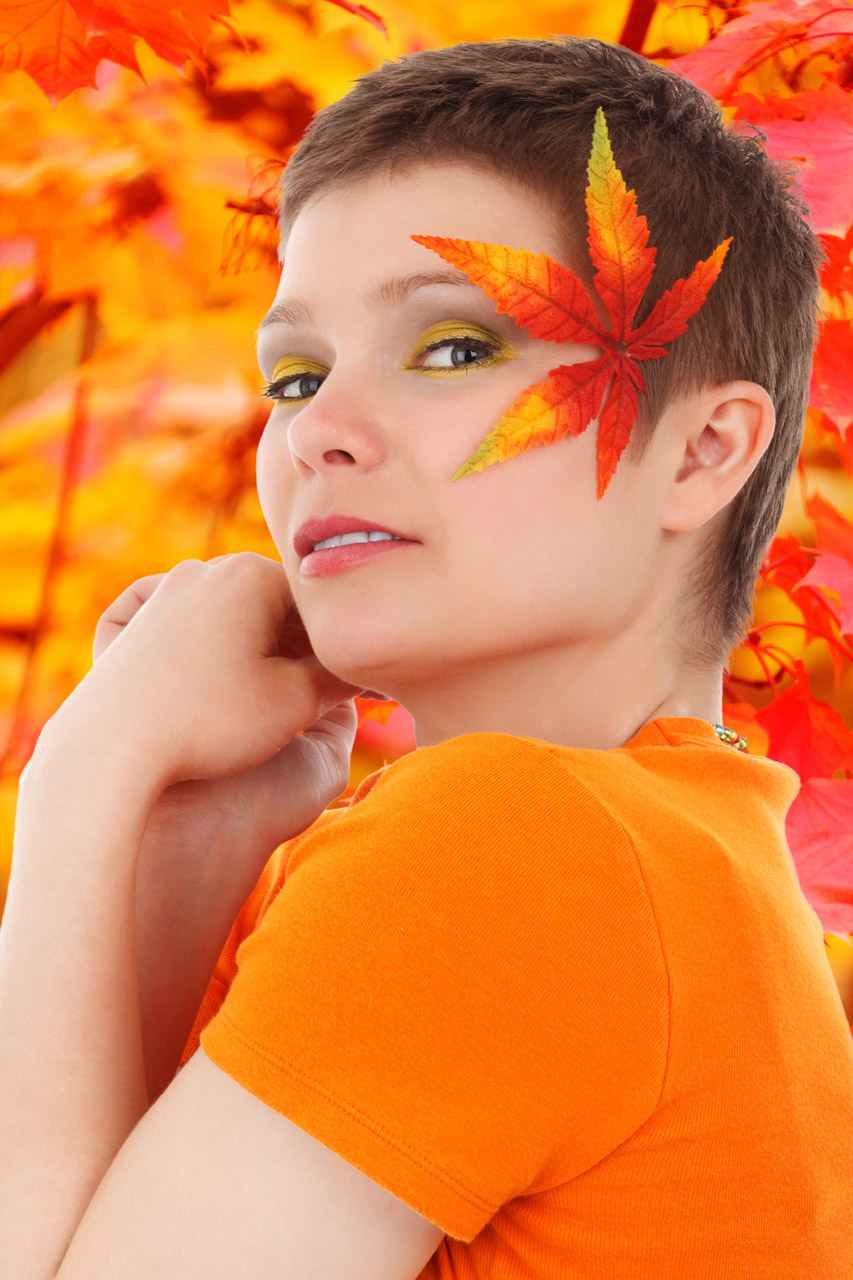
Autumn girl

Young female model in autumn setting.